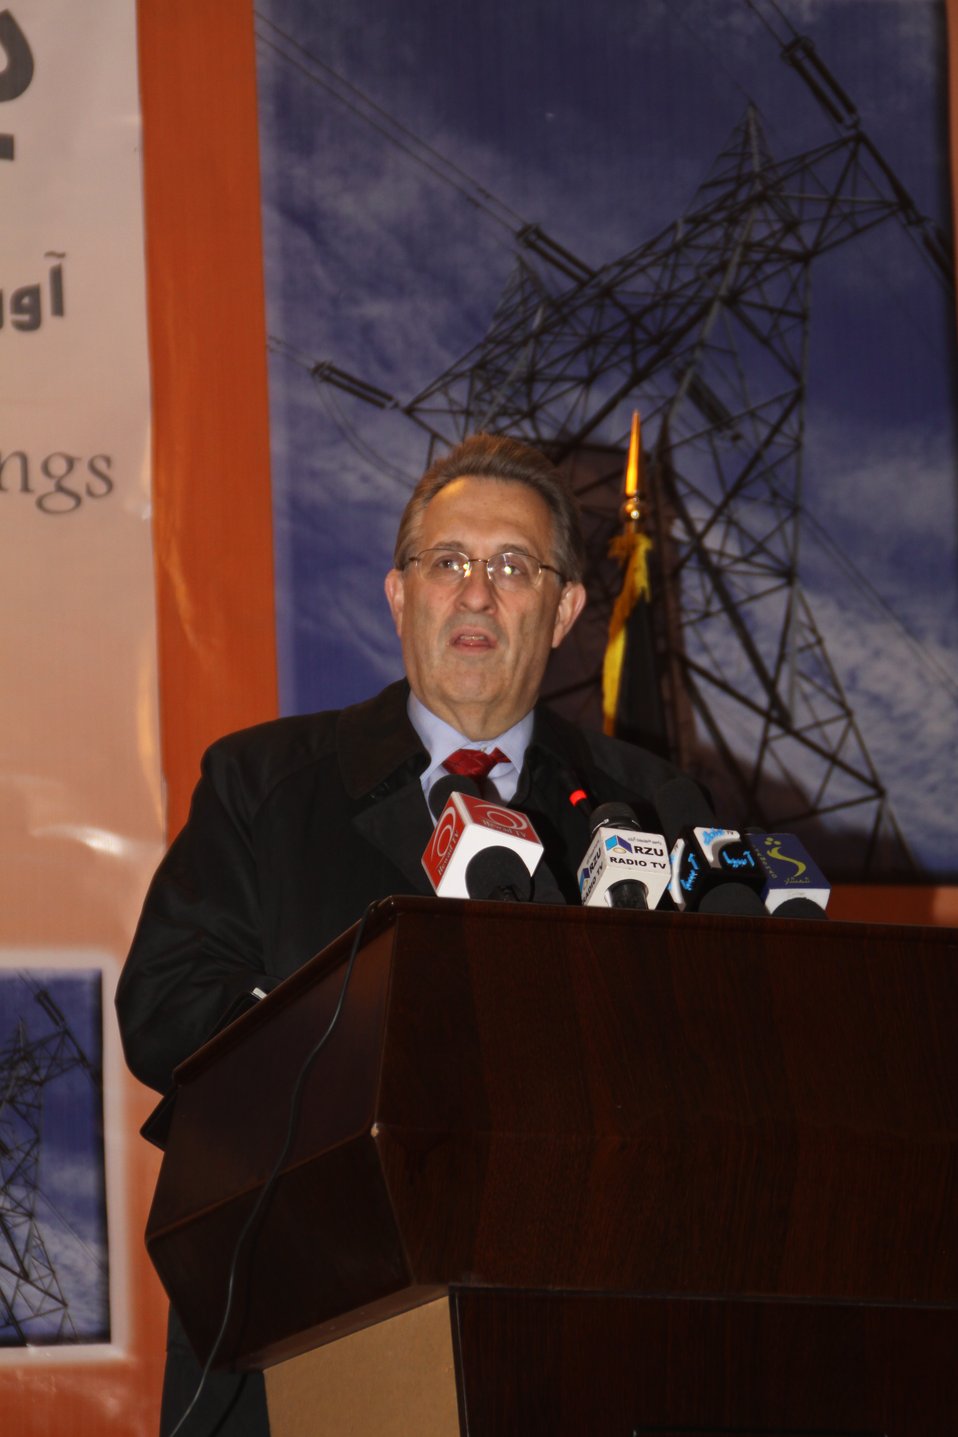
U.S. Ambassador E. Anthony Wayne